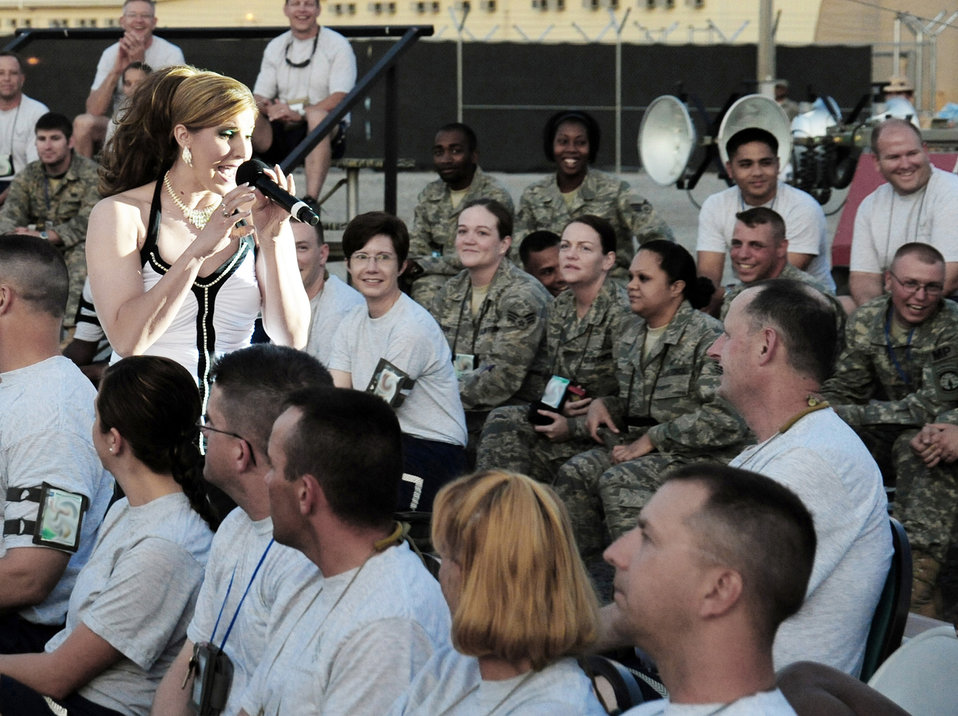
Tops In Blue entertain deployed forces in Kyrgyzstan

Staff Sgt. Naomi Keen gets up-close and personal with the crowd during a Tops In Blue show July 9 at Manas Air Base, Kyrgyzstan. Sergeant Keen is a 59th Surgical Operations Squadron health services craftsman stationed at Lackland Air Force Base, Texas, and hails from Simpsonville, Texas.